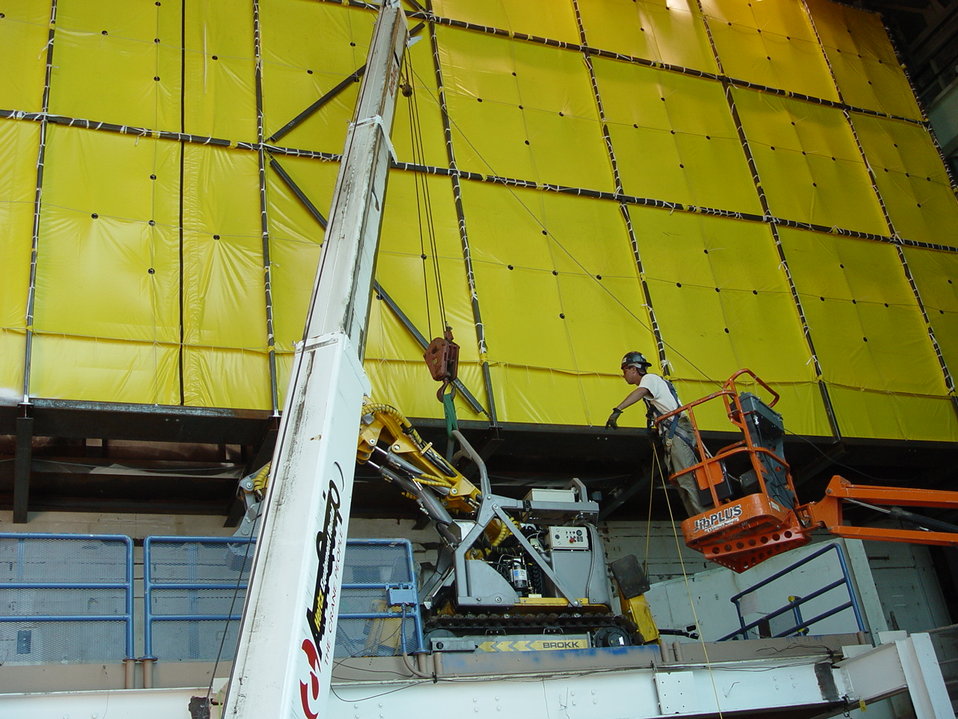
Preparations for BGRR Biological Shield removal

A worker prepares a 4,760-ton shield that had surrounded a graphite pile at the Brookhaven Graphite Research Reactor for removal.